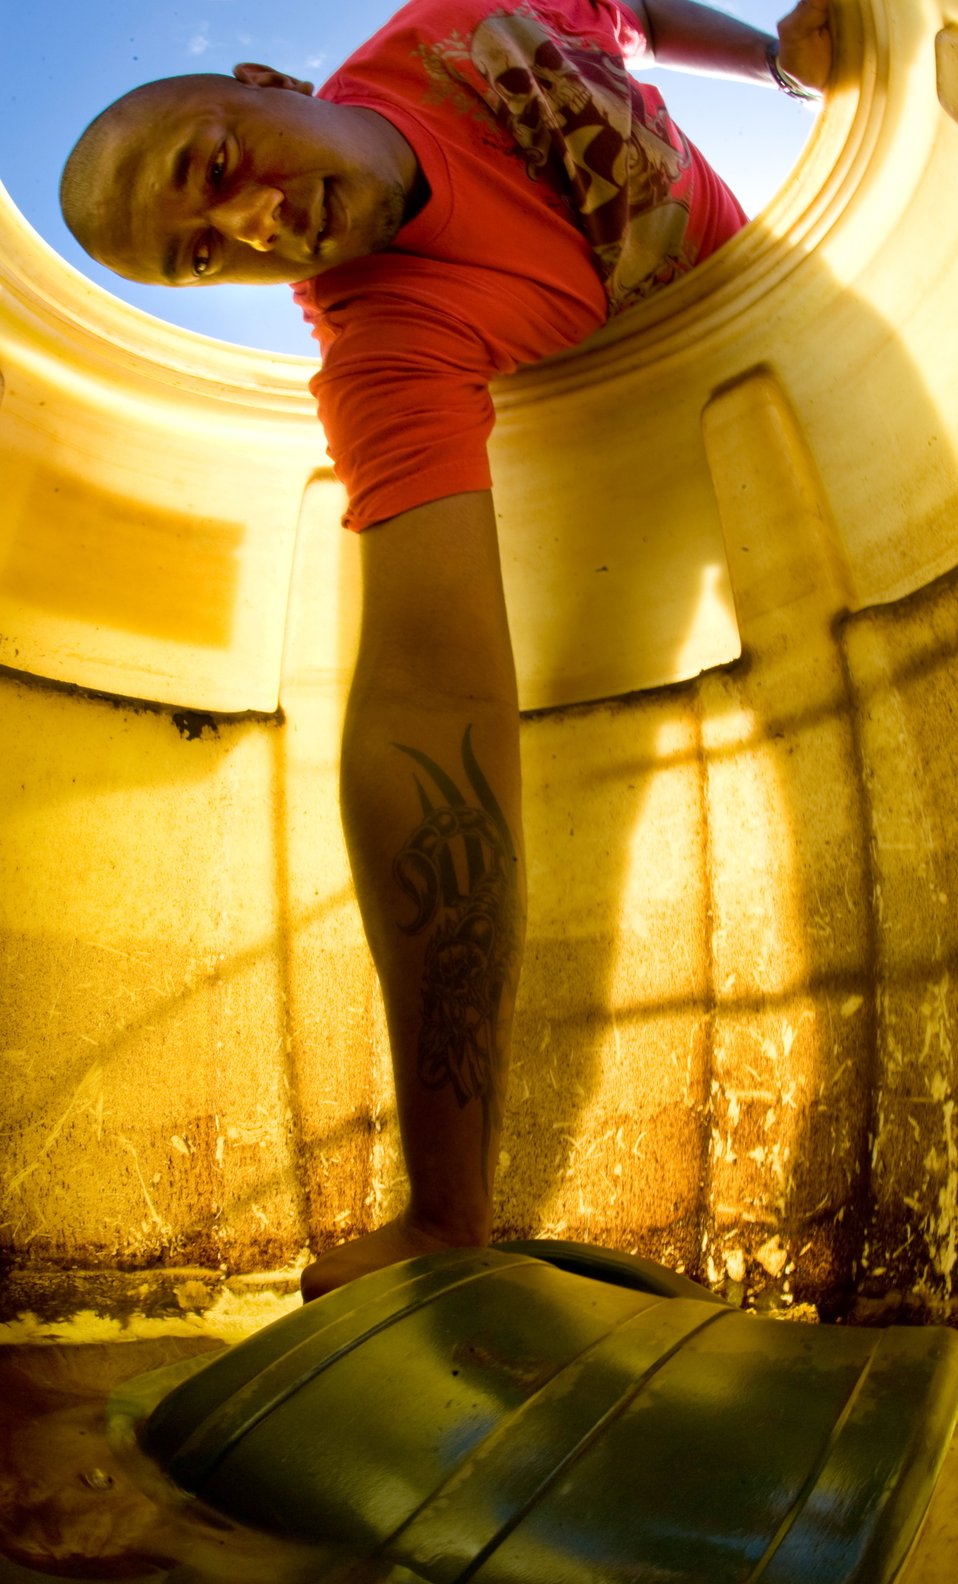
Robert's Plants

Robert Yon takes a break from a busy day to draw some water from a barrel and hand water some Ascension Spurge (E. origanoides), an endangered species of plant found only on the Ascension Island, predominantly on the property used by the 45th Operations Group, Detachment 2, Ascension Auxiliary Airfield (AAF), in the South Atlantic Ocean. Mr. Yon a certified environmental technician works with 13 protocols of engineering and the environment. Some of those are hazardous waste and PCB protocols. The small plot of land he cultivates supports seed collection by a British conservation organization on the island. Although, all U.S. Air Force bases have environmental programs, this small remote island environment allows easy observation of the efforts supporting the endangered spurge plant and self-sufficient water, power and waste programs.